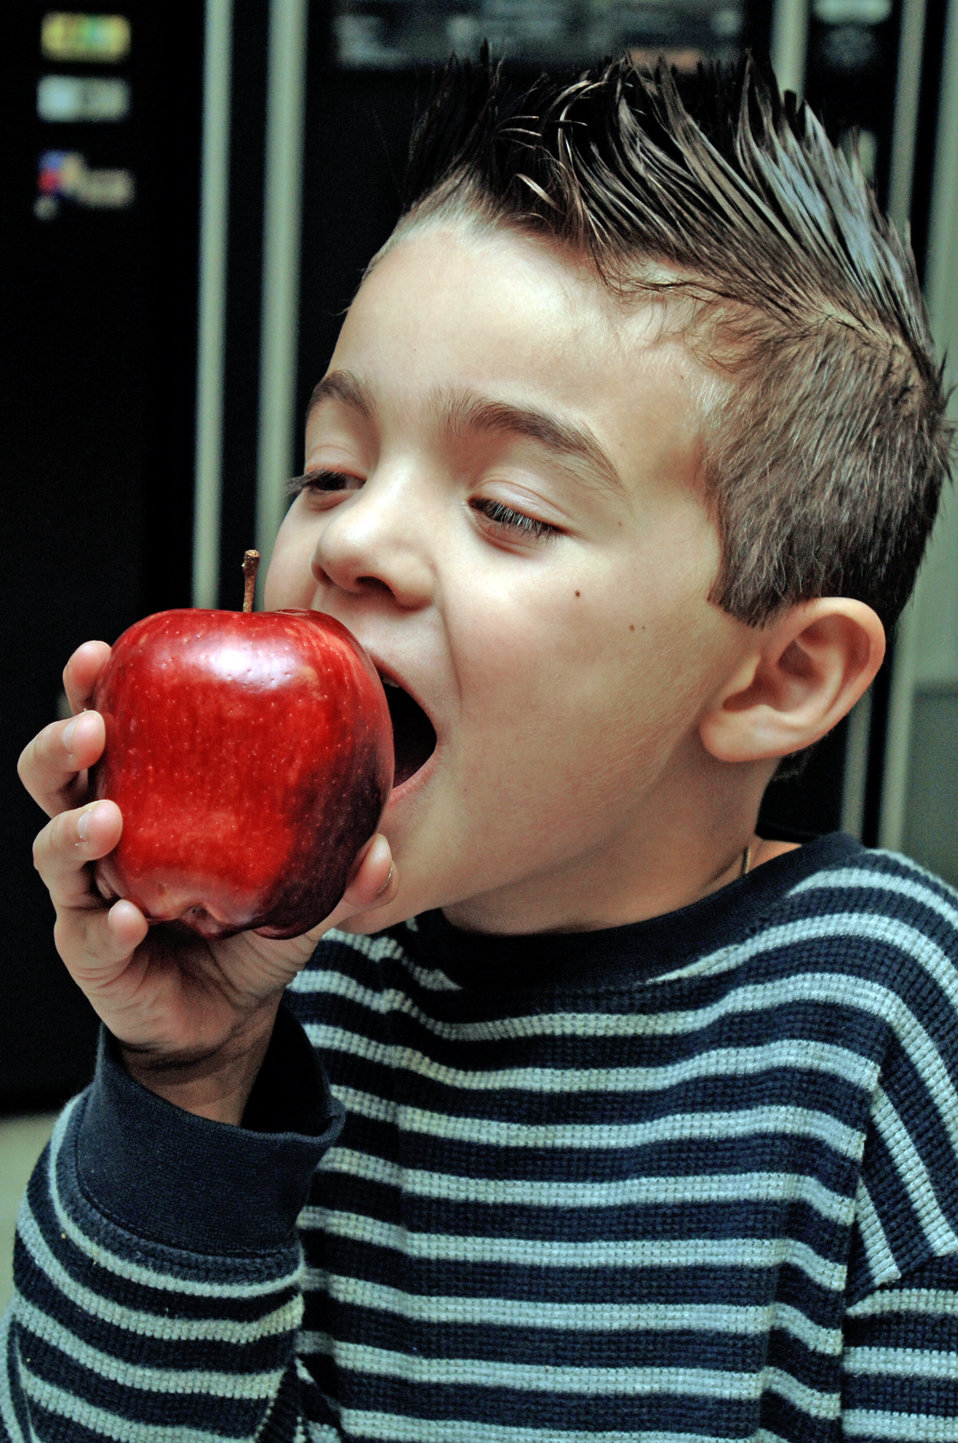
Officials offer tips to help children develop healthy habits

Angel Cuevas, son of Army Spc. Ana Cuevas from the Institute of Surgical Research at Fort Sam Houston, Texas, enjoys an apple at the Wilford Hall Medical Center Feb. 25, 2010, at Lackland Air Force Base, Texas. During National Nutrition Month, Airmen are encouraged to take time to assess their eating habits and how healthy eating habits are taught to children.